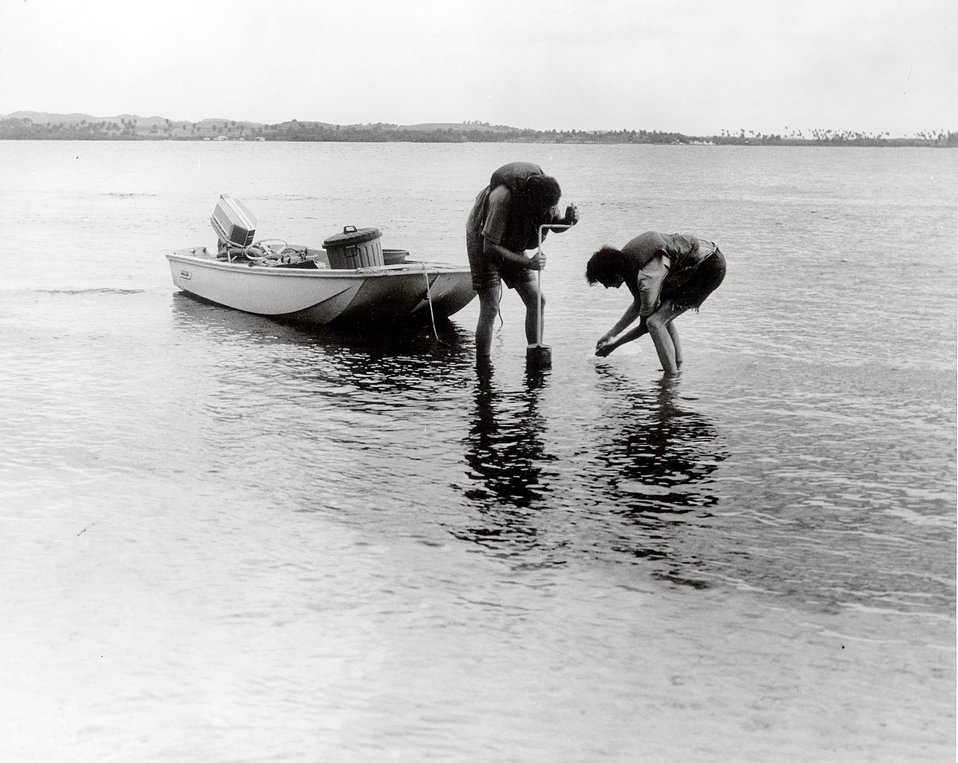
The hand auger technique used by researchers of the U.S. Atomic Energy Commission's Puerto Rice Nuclear Center in obtaining bottom samples from a turtle grass bed. Circa 1972.